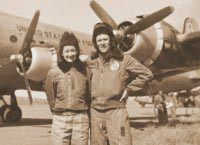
Captain Lillian Kinkella Keil

1950's -- In 1938, Lillian Kinkella Keil's mother thought her daughter might like to be one of a brand new group of women, called